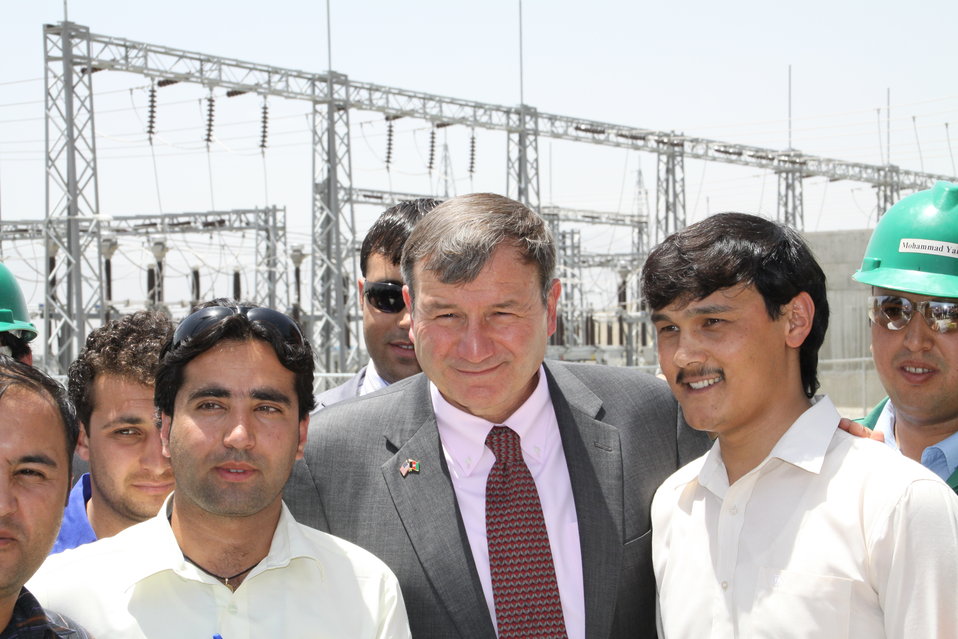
105 MW Tarakhil Power Plant Handover